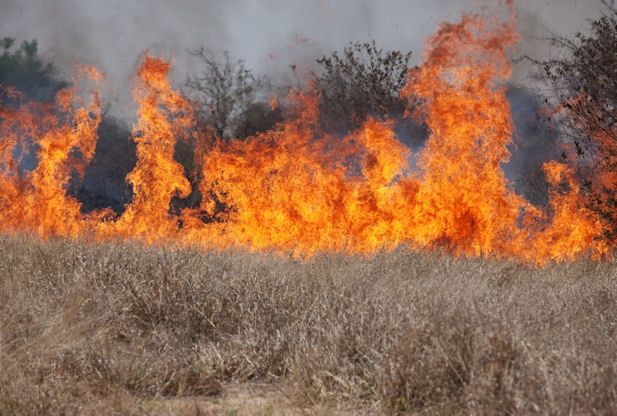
Cheatgrass on fire

A wildfire fueled by invasive cheatgrass burns fragile sage steppe habitat.